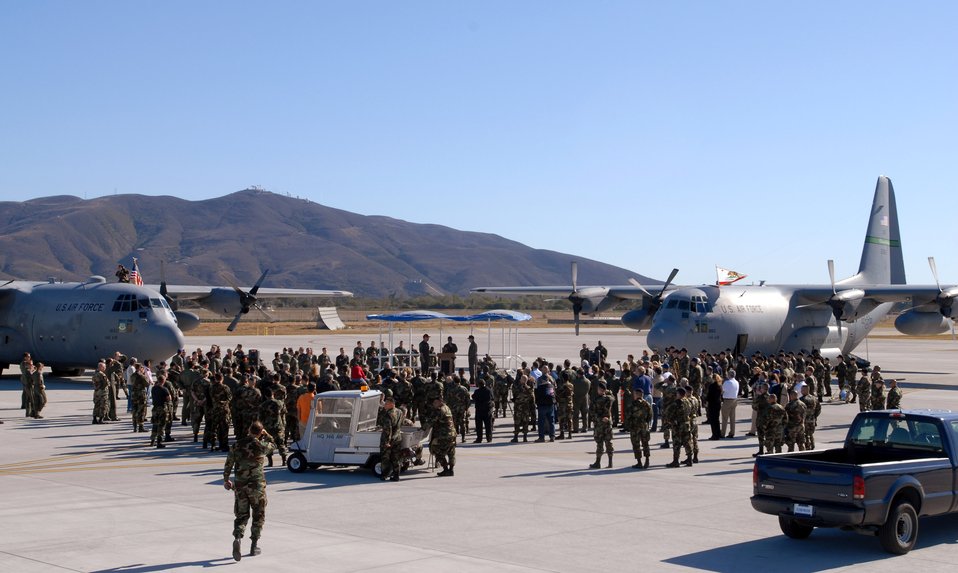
Farewell Hercules

Memeber of the 146th Airlift Wing prepare to send off aircraft 1862 and 1833 Dec. 2 from Channel Island Air National Guard Station, Calif. Wing Airmen flew their last two C-130 Hercules for the final time. The aircraft were delivered to the Air Force in the early 1960's and came to the 146th in 1974. They served in many ways including bringing in relief supplies and tranporting injured citizens natural disasters, most recently Huricane Katrina. The wing's C-130s were also capable of delivering fire retardant to help fight wildfires.